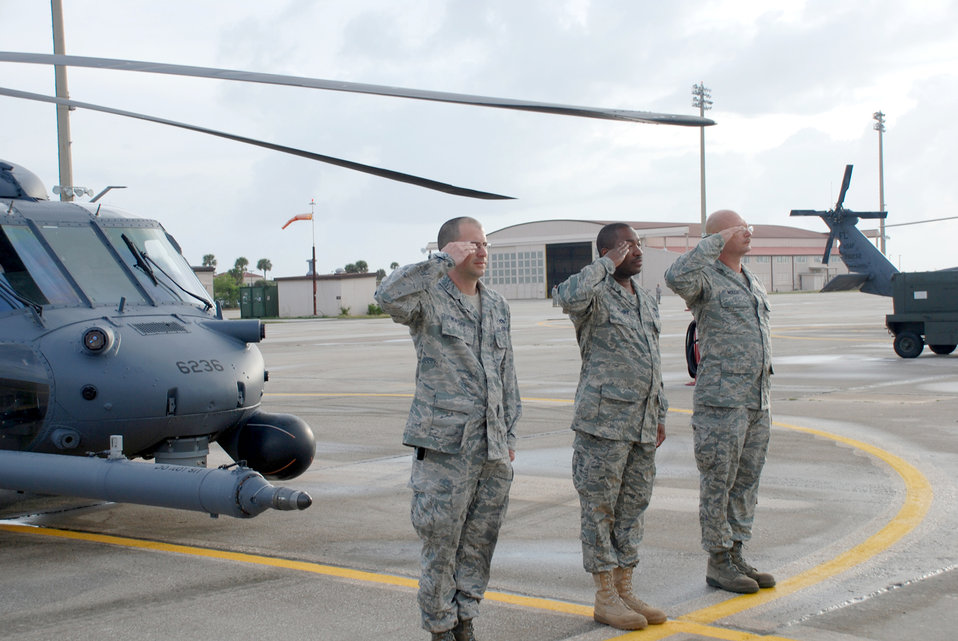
Rescue wing Airmen launch entire fleet during hurricane exercise

Maintenance crew chiefs from the 920th Rescue Wing present their HH-60G Pave Hawk helicopter during an inspection March 6, 2011, at Patrick Air Force Base, Fla. The 920th RQW commander checked over his entire fleet of six pave hawks and three HC-130 King refuelers, prior to the fleet taking flight.